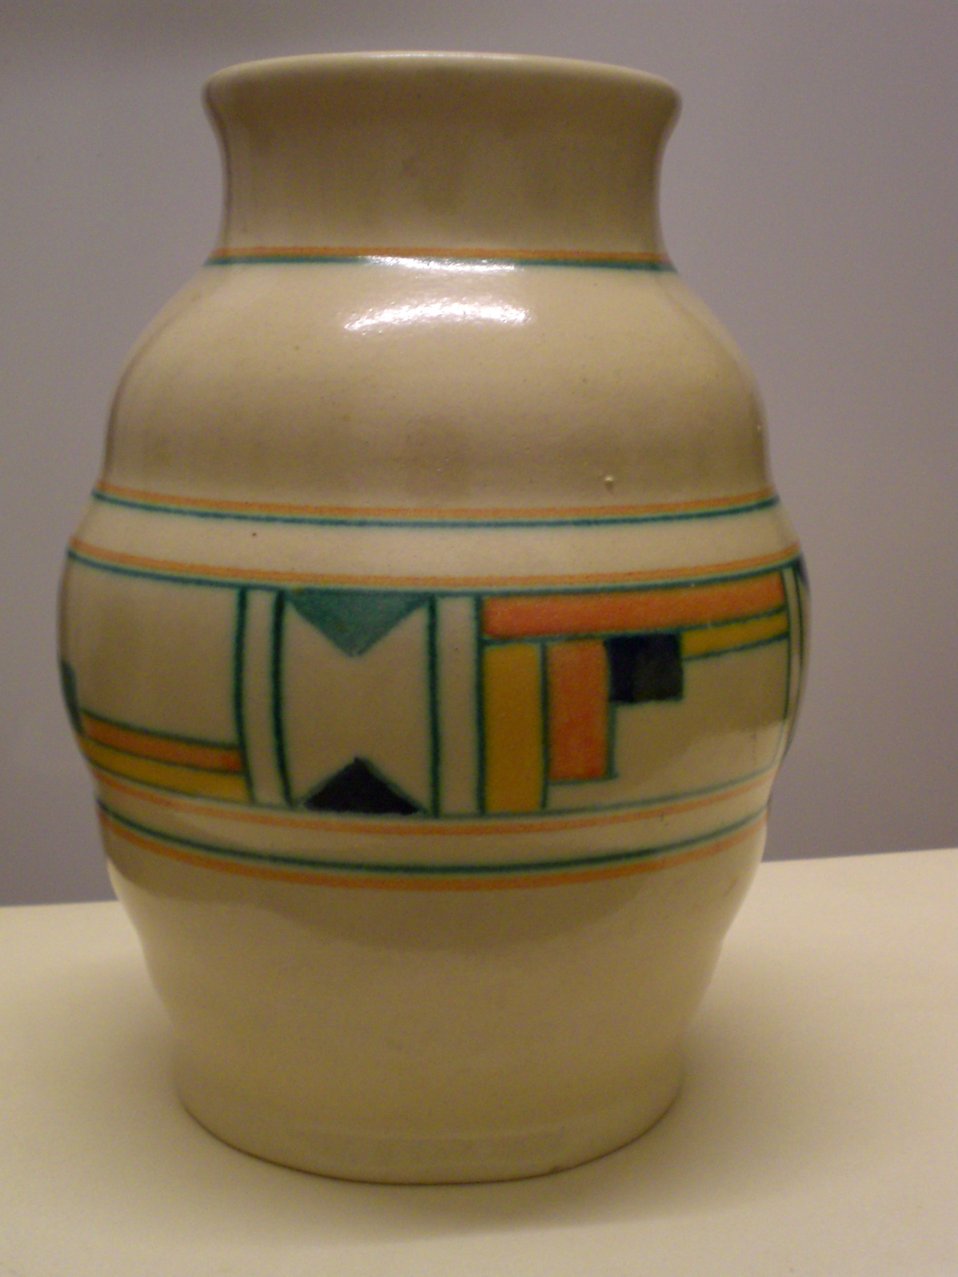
Nederlands: vaas uit een serie rond 1930